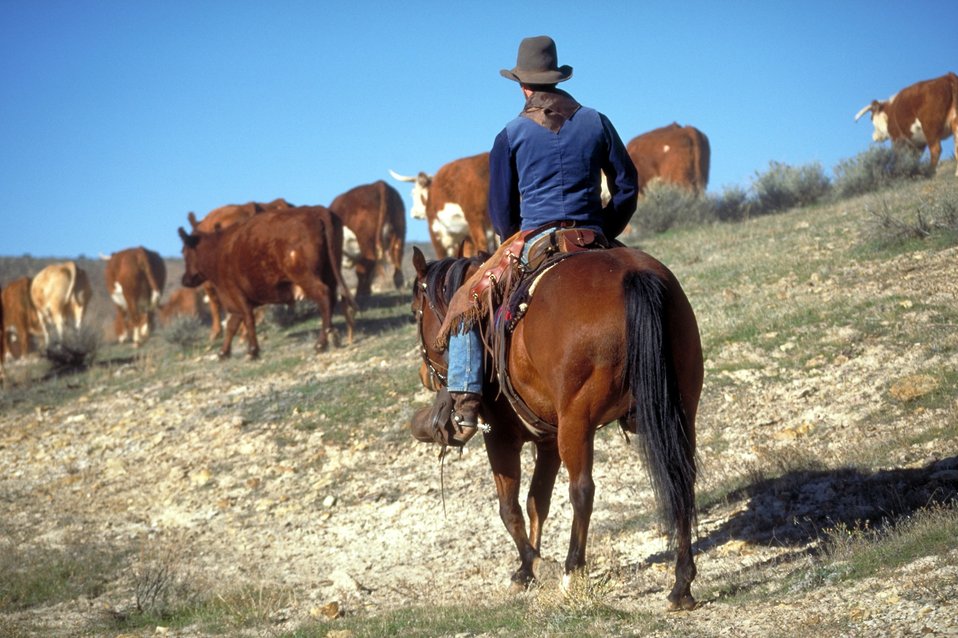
Working cowboys living near Vernal, Utah.